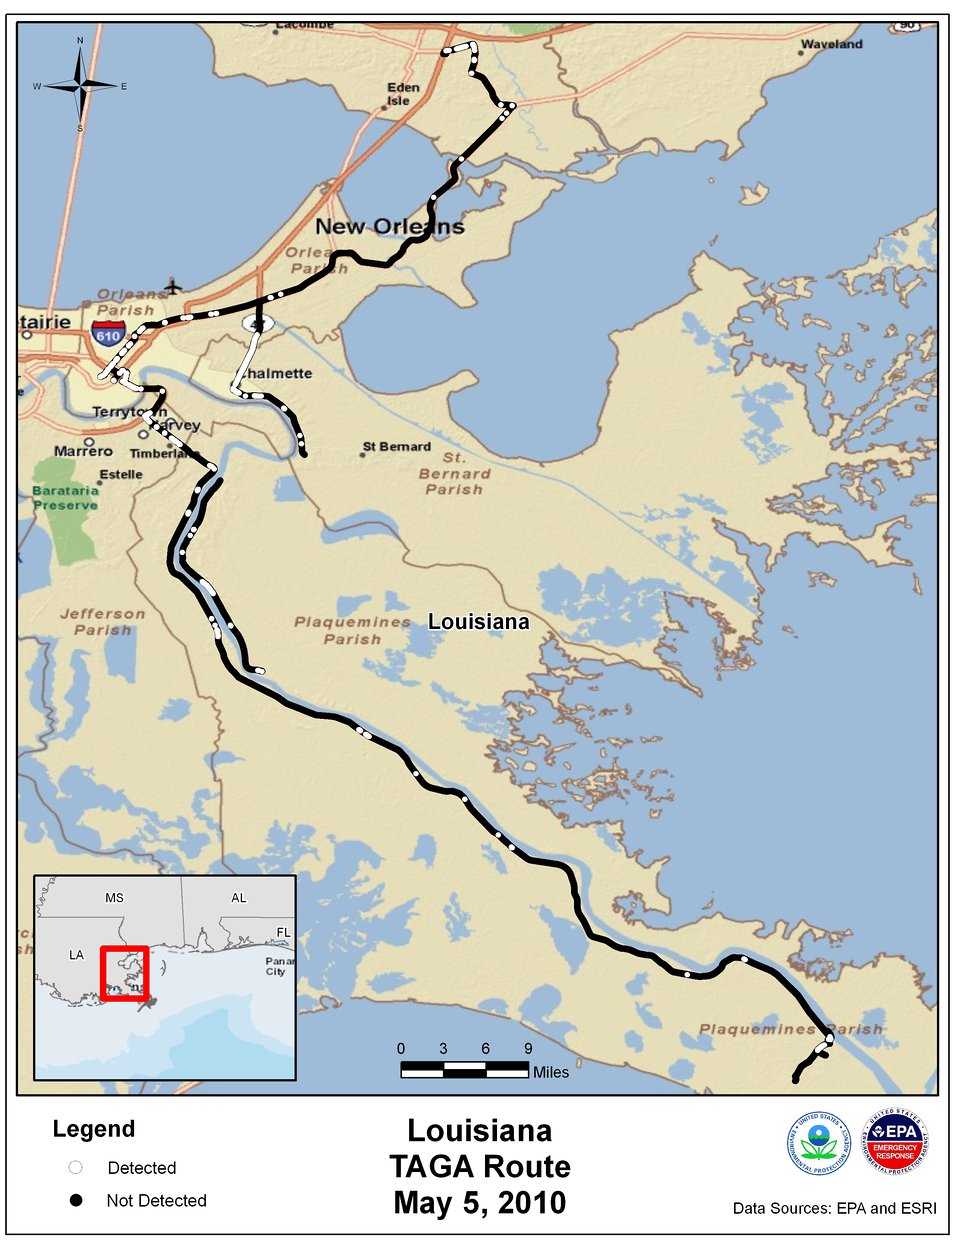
EPA TAGA Air Monitoring Locations May 5, 2010